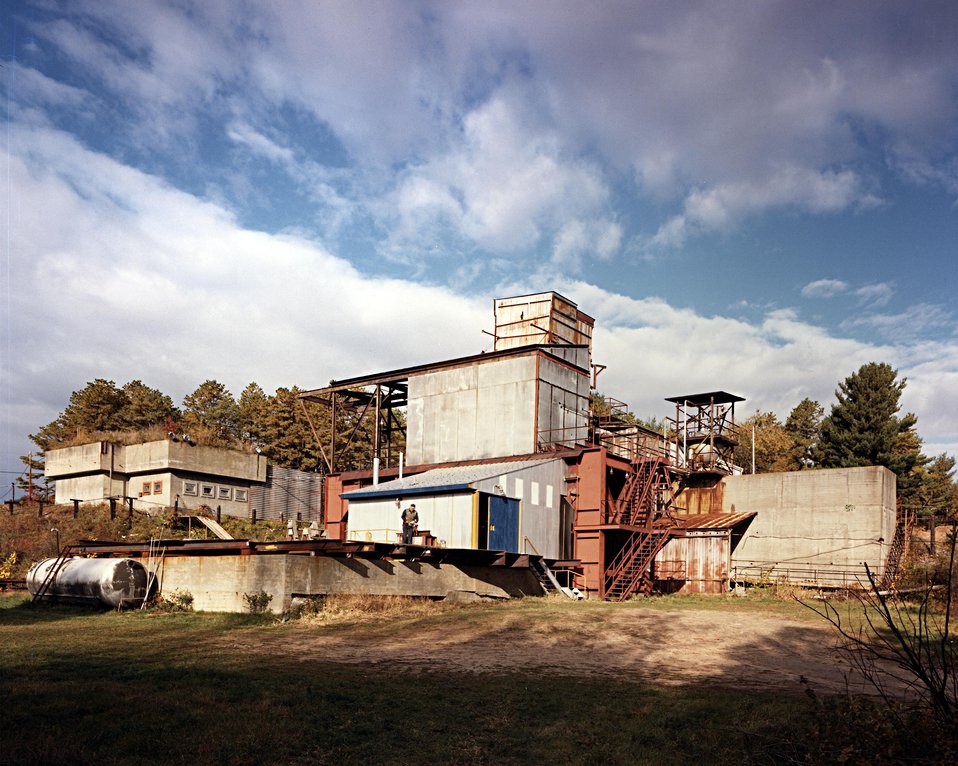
THE WRIGHT MALTA BIOMASS GASIFICATION PROCESS DEVELOPMENT UNIT (PDU).

RESEARCHERS WILL ASSESS THE FEASIBILITY OF GASIFYING BIOMASS TO PRODUCE FUEL IN A SMALL, CRITICAL PRESSURE, LOW TEMPERATURE, WATER/STEAM GASIFIER. IN THE GASIFIER, BIOMASS (WOOD,PLANT OR ANIMAL WASTES, ETC.) IS MIXED WITH STEAM AND OXYGEN AT HIGH TEMPERATURES AND PRESSURES TO PRODUCE GAS, LIQUID FUELS AND/OR FUEL OIL. A LOW COST SYSTEM WAS PROPOSED, DIFFERENT TYPES OF BIOMASS WERE STUDIED, MODELS WERE ESTABLISHED, AND A THREE DRY TONS PER-DAY PROCESS DEVELOPMENT UNIT WAS DESIGNED. IN ADDITION, AN ECONOMIC ASSESSMENT WAS MADE CONCERNING THE MEDIUM BTU GAS END PRODUCT.